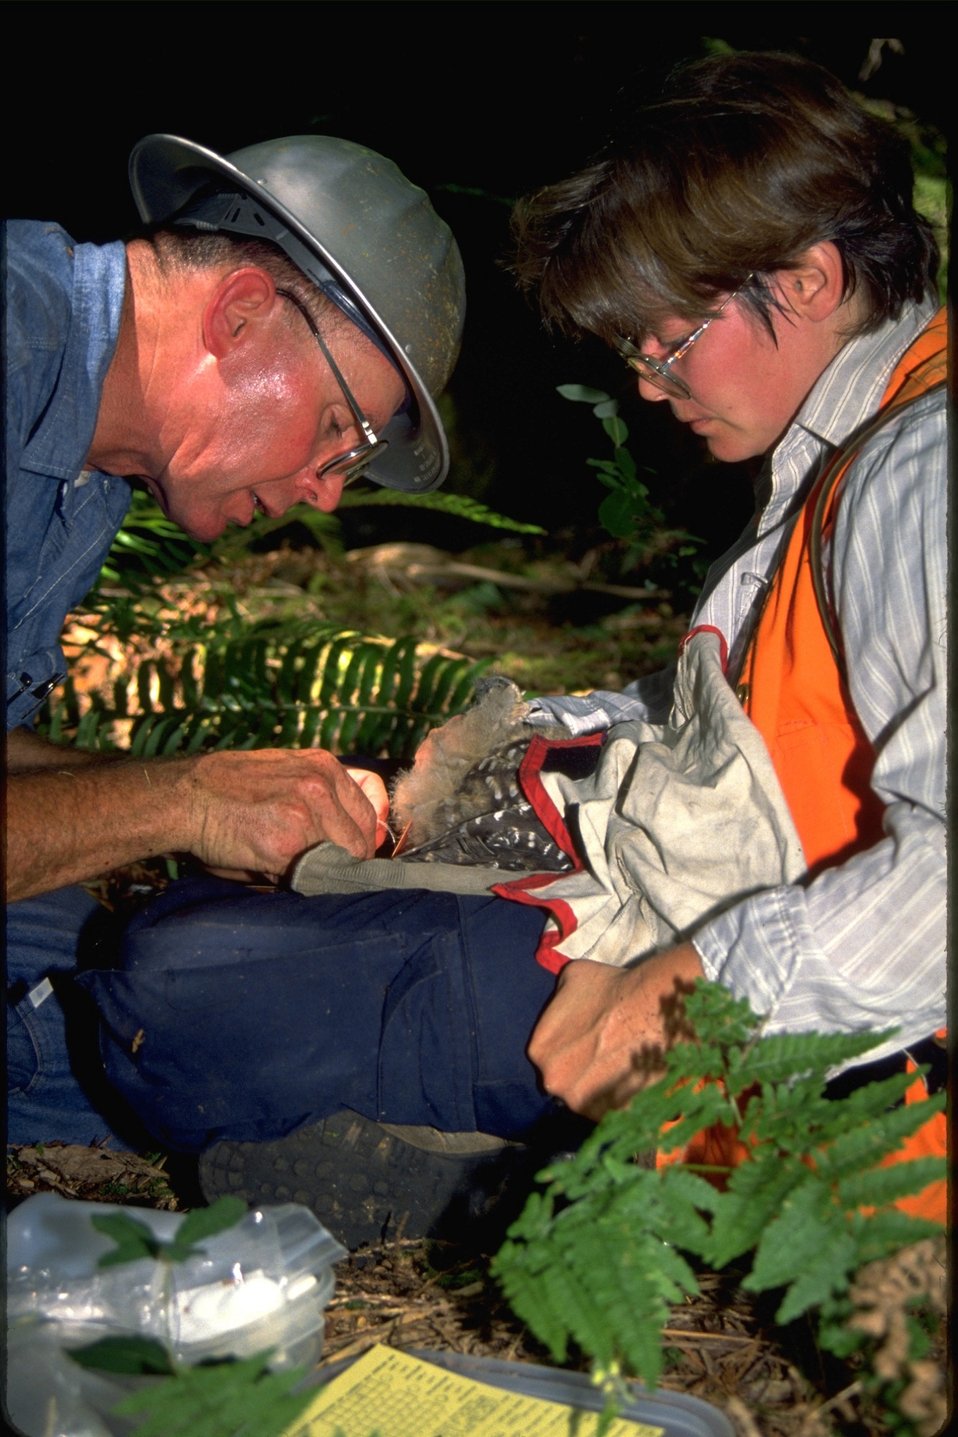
Frank attaching radio transmitter while Joanne holds the baby Northern Spotted Owl.